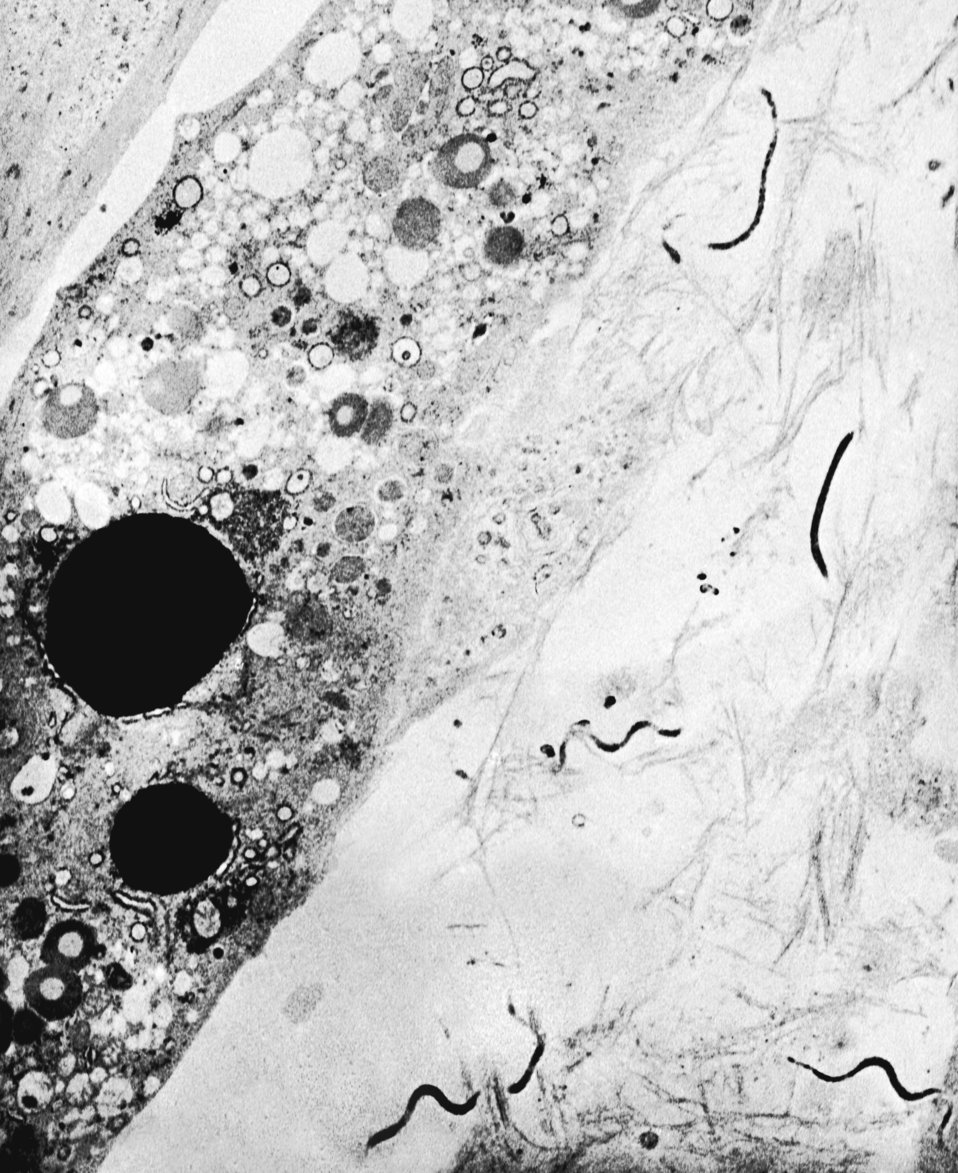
Electron micrograph of Treponema pallidum on cultures of cotton-tail rabbit epithelium cells (Sf1Ep).